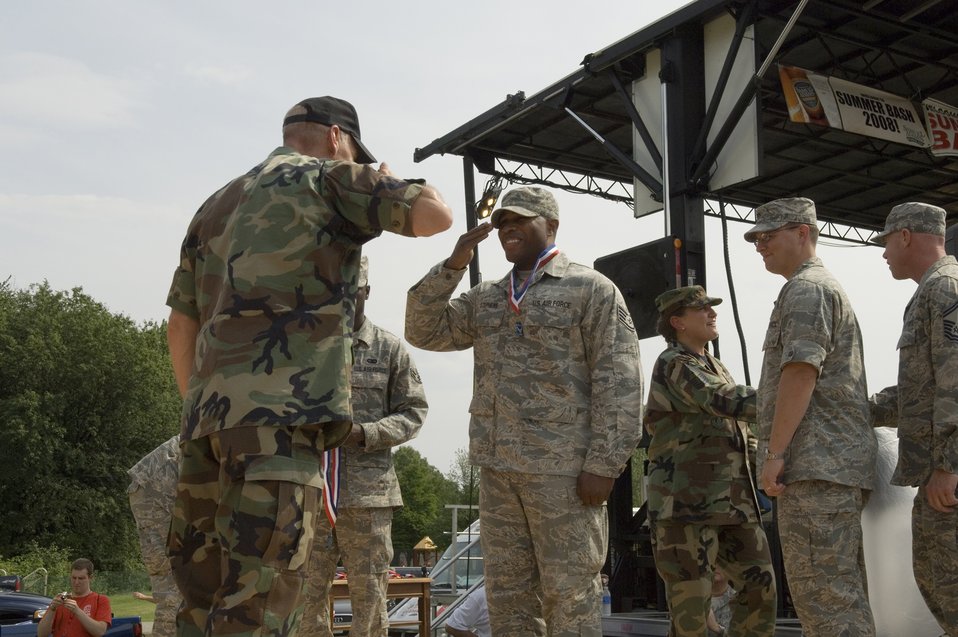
Heroes homecoming

Staff Sgt. Michael Stephens (middle) salutes Col. Tom Schluckebier during the Heroes' Homecoming ceremony June 27 at Hanscom Air Force Base, Mass. The ceremony paid tribute to more than 50 base Airmen who were deployed over the past six months, as well as Airmen's families. Sergeant Stephens is assigned to the 66th Mission Support Group, and Colonel Schluckebier is the 66th Air Base Wing commander.